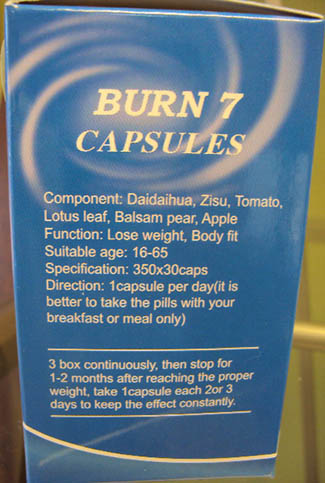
RECALLED – Dietary Supplement

December 23, 2013 – Product Recall – Deseo Rebajar Inc. Issues Voluntary Recall of Burn 7 Capsules Due to Undeclared Active Ingredient.